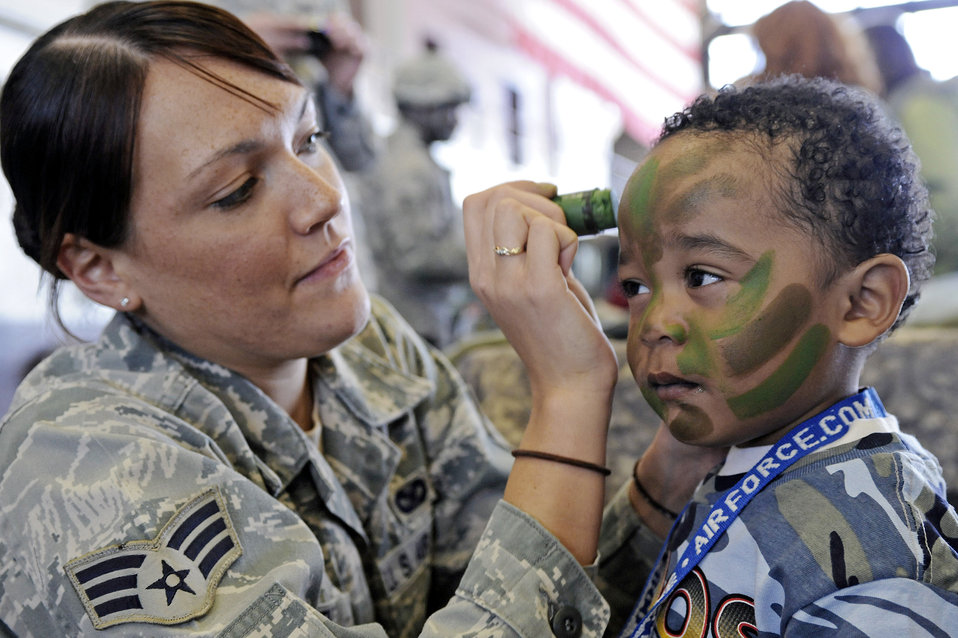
Ellsworth Airmen give children taste of deployment process

Senior Airman Melanie Allen paints the face of a child during the Kids, Spouses and Teachers Understanding Deployment Operations event March 13, 2010, at Ellsworth Air Force Base, S.D. Airman Allen is a 28th Security Forces Squadron training instructor.